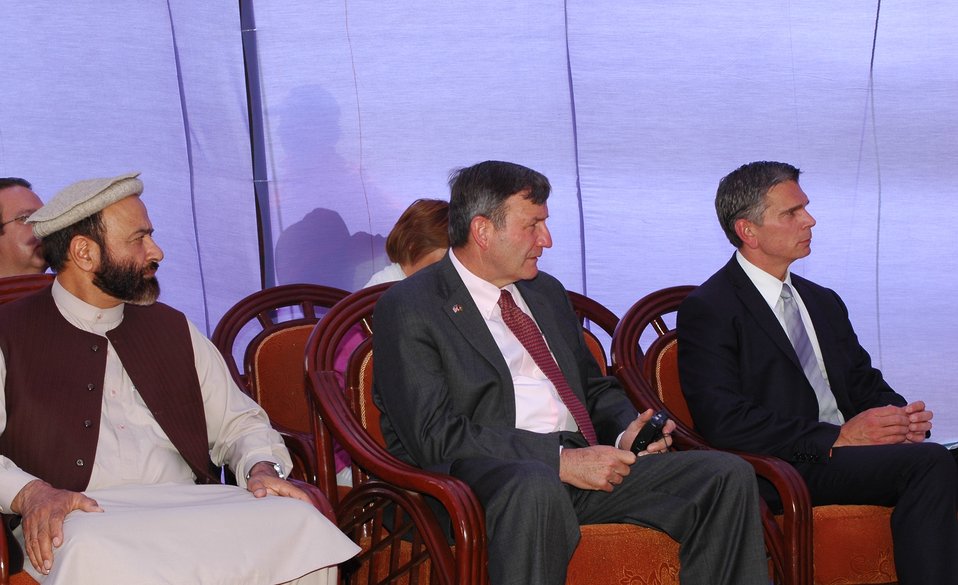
105 MW Tarakhil Power Plant Handover